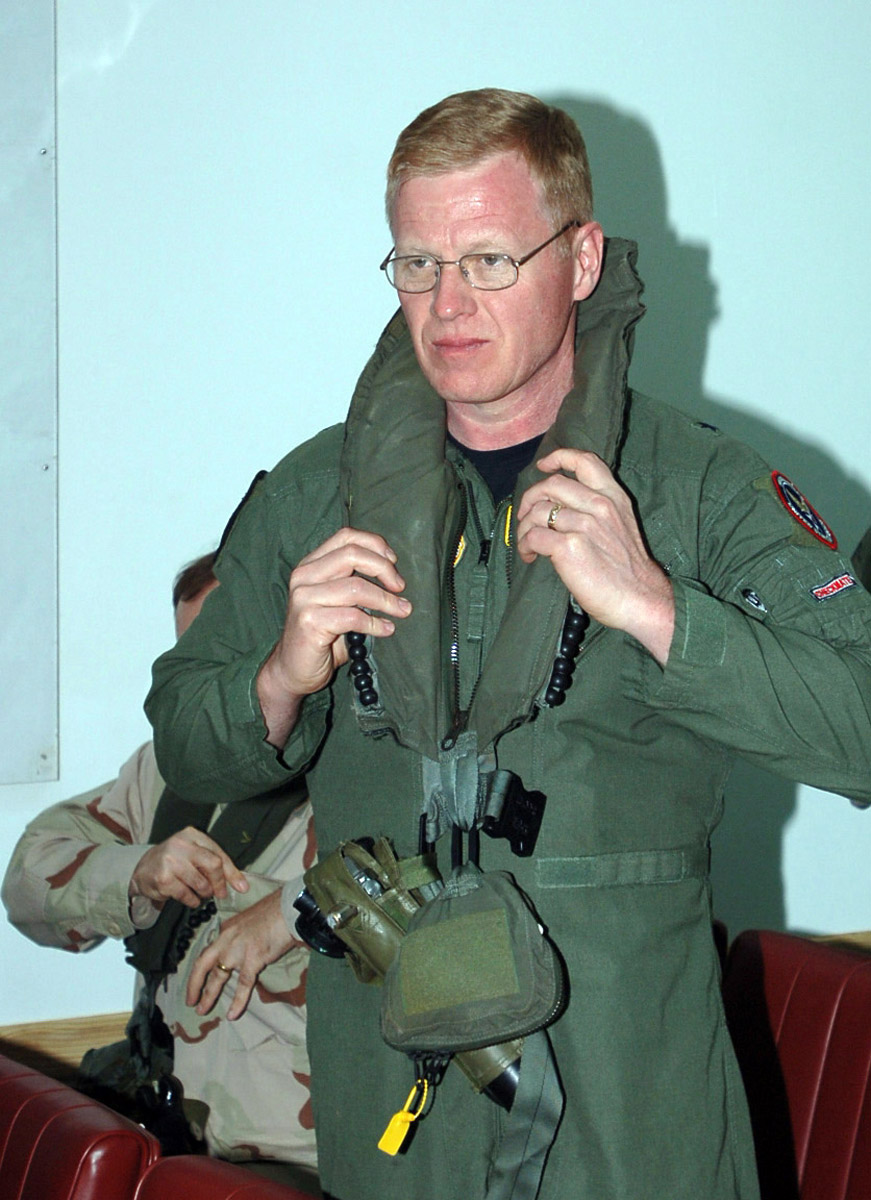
CJTF-HOA relationship with Djiboutians impresses CAPSTONE officers

Brig. Gen. Lawrence A. Stutzriem places his personnel protection equipment on before boarding a CH-53 helicopter to fly to Obock, Djibouti form Camp Lemonier, Djibouti, Feb. 24. General Stutzriem was part of the U.S. military flag officers in CAPSTONE who toured the Combined Joint Task Force-Horn of Africa-led construction sites. Forty-five U.S. military senior leaders are touring combatant commands as part of the overseas field study in the CAPSTONE course designed for newly appointed generals or equivalents. General Stutzriem is the Air Force Strategic Studies Group-CHECKMATE chief of staff.